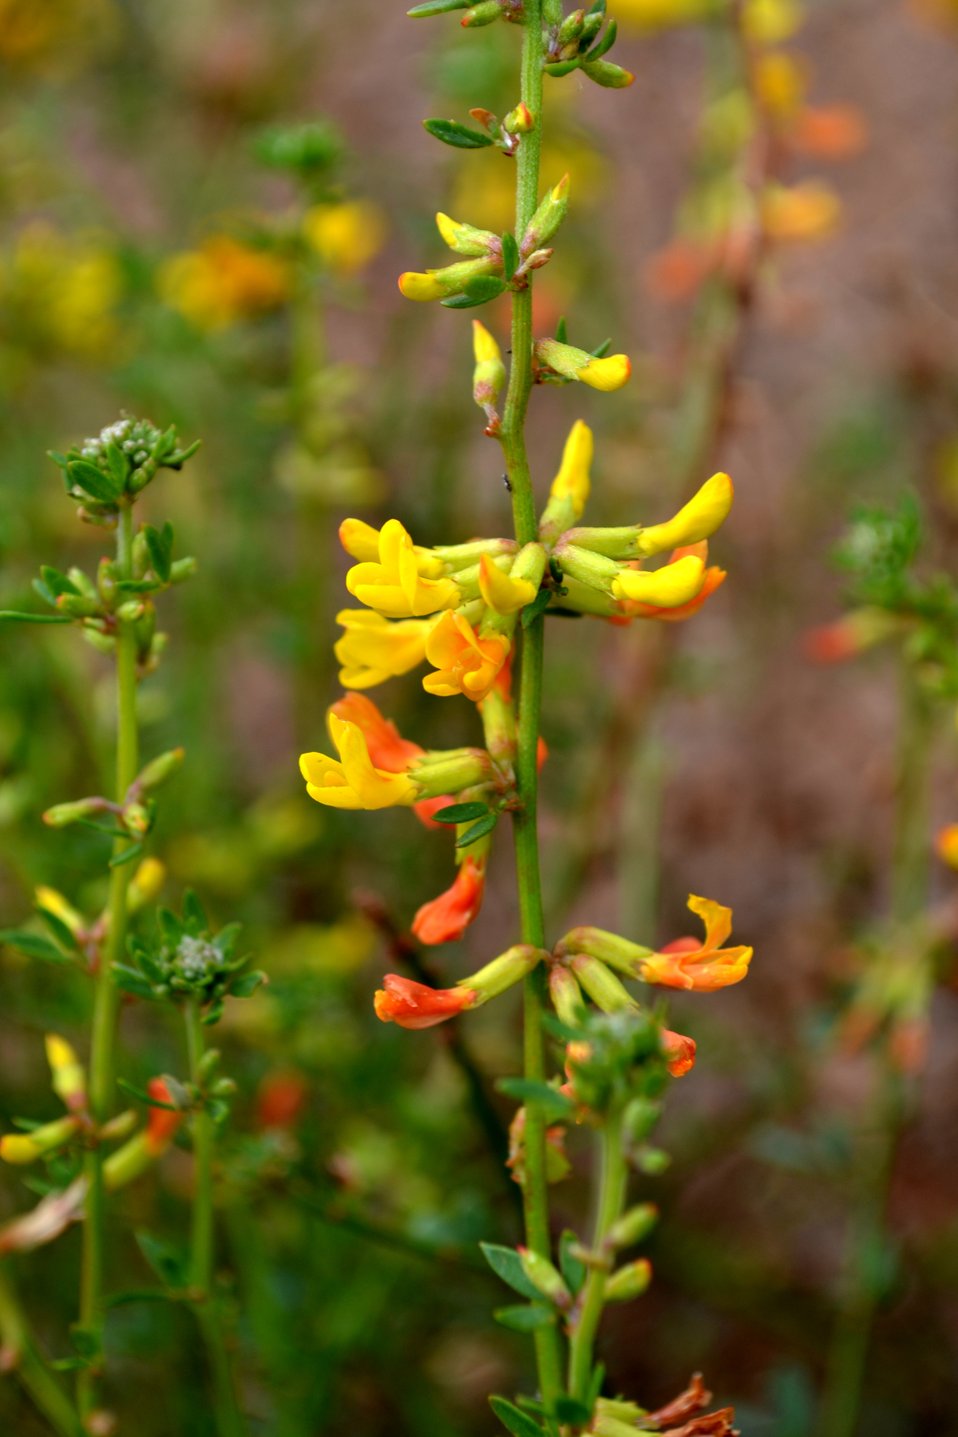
Deer weed (Acmispon glaber) closeup